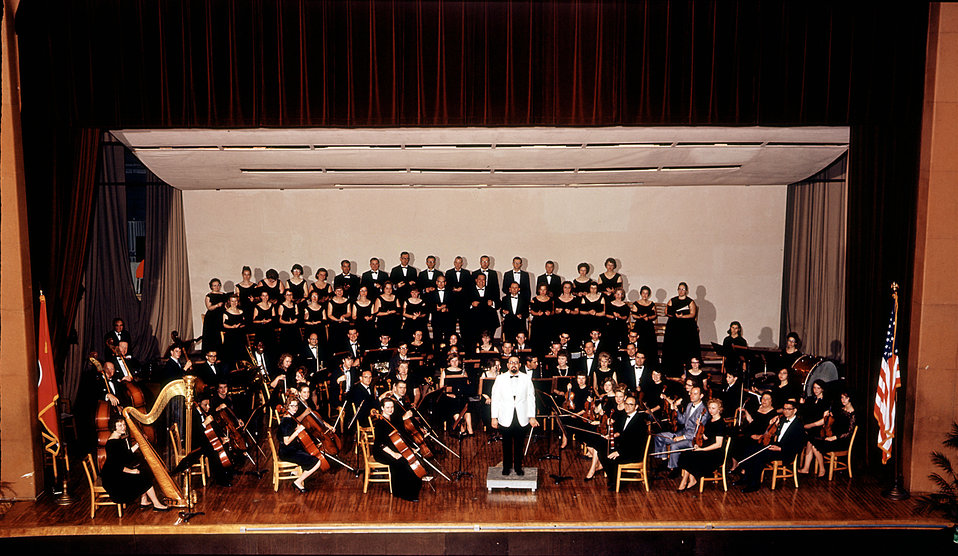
Oak Ridge Symphony

68-688 DOE photo Frank Hoffman 1968 Oak Ridge tennessee